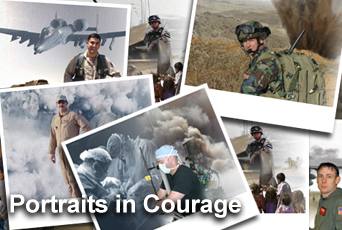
Airmen's heroic actions highlighted on 'Portaits in Courage'

Courageous actions of 15 Airmen are highlighted in the inaugural edition of the Chief of Staff's Portraits in Courage. The vignettes are available on Air Force Link under the Portraits in Courage area. The stories are also compiled in a soft-cover book being distributed in limited numbers to the major commands.